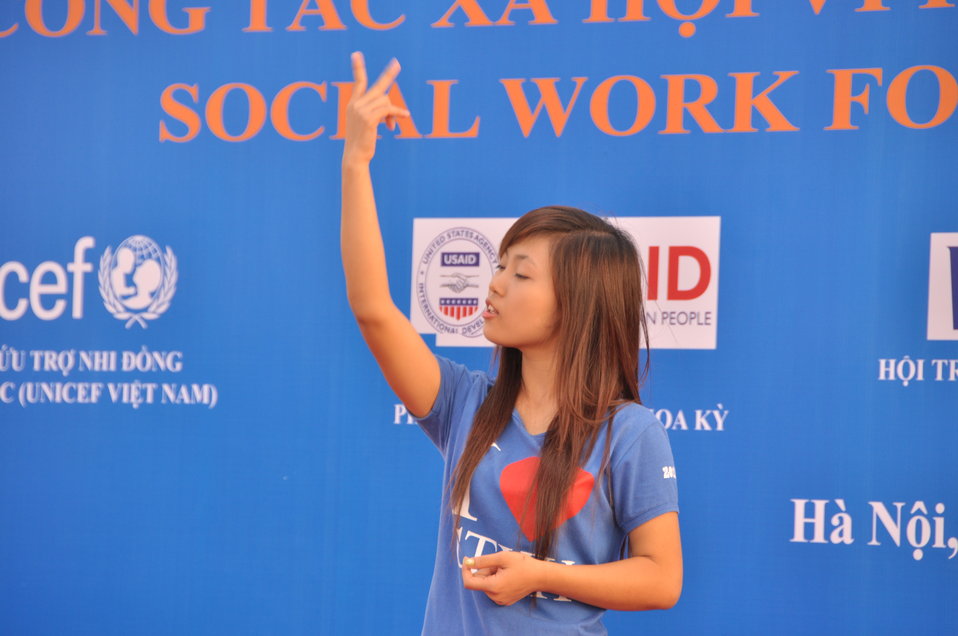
USAID Supports Social Work Education

Photo: @USAIDVietnam, November 9, 2012